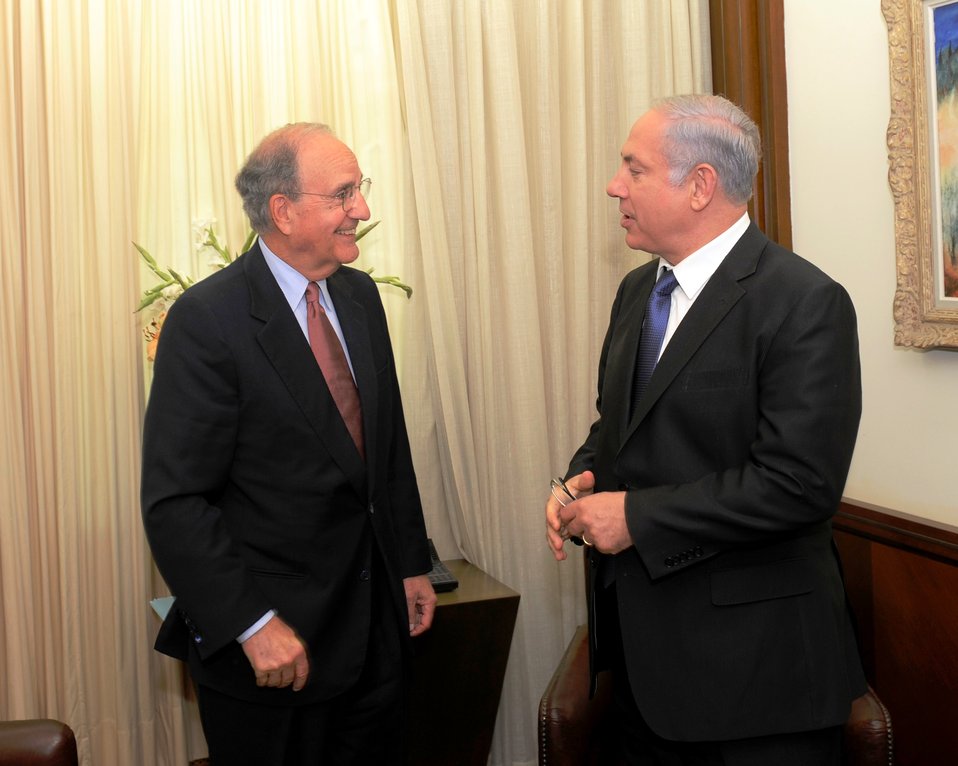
Special Envoy Mitchell Speaks With Israeli Prime Minister Netanyahu

U.S. Special Envoy for Middle East Peace George Mitchell speaks with Israeli Prime Minister Benjamin Netanyahu at the Prime Minister's office in Jerusalem onJuly 16, 2010.